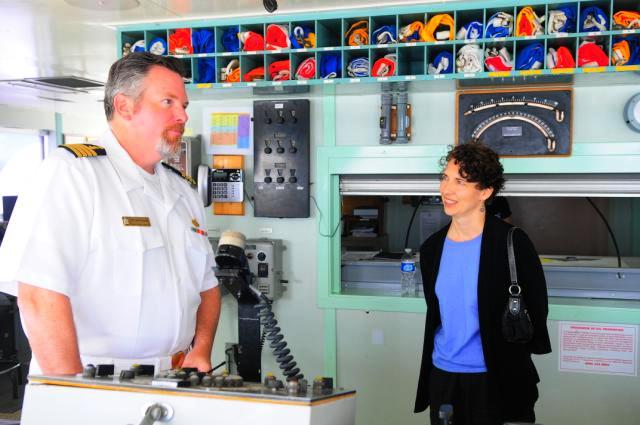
MSC Capt. Bradshaw Briefs Consul General Bauer

MSC Captain David Bradshaw briefs U.S. Consul General Surabaya Kristen Bauer on the bridge of the USNS Mercy hospital ship in Ternate, Indonesia, on July 18, 2010.